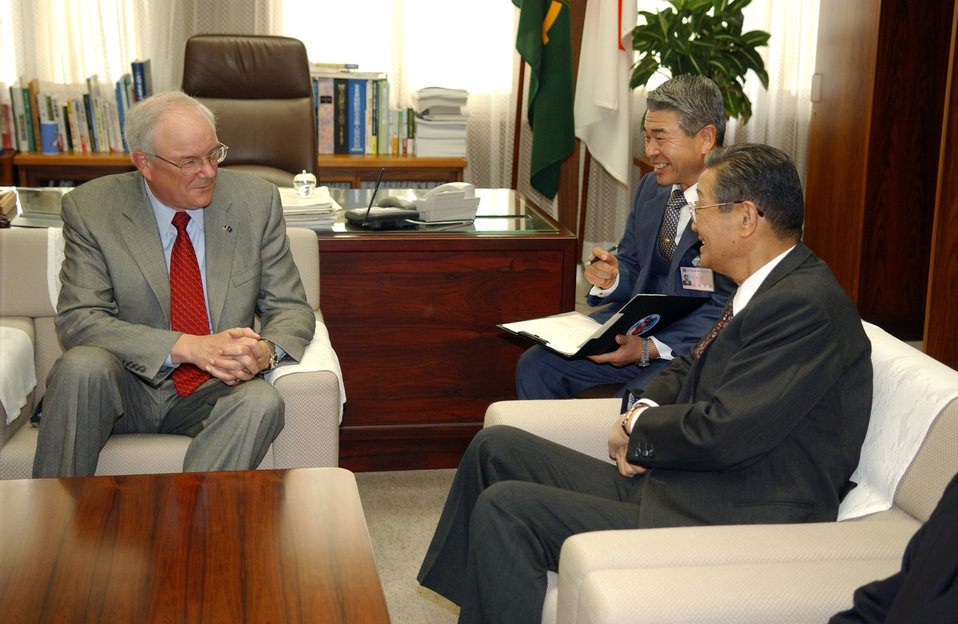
SECAF visits mainland Japan

Secretary of the Air Force Michael W. Wynne speaks with Misawa City Mayor Shigeyoshi Suzuki (right) during his visit to Misawa Air Base, Japan, on Saturday, March 25, 2006. Secretary Wynne spoke on issues involving joint efforts with the Japanese and American Air Forces.